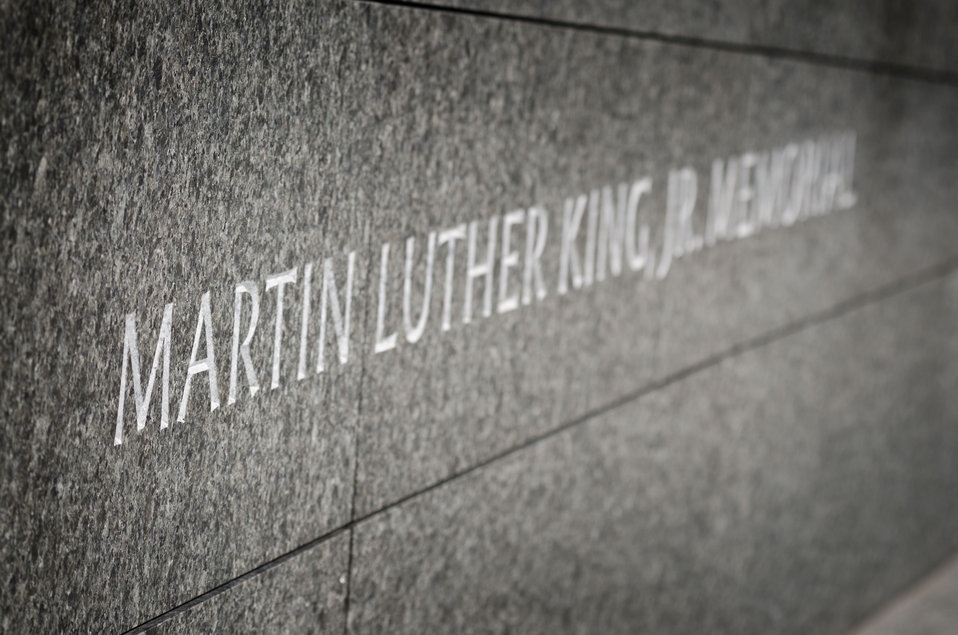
Martin Luther King, Jr. Memorial in Washington, DC, on Saturday, October 8, 2011.